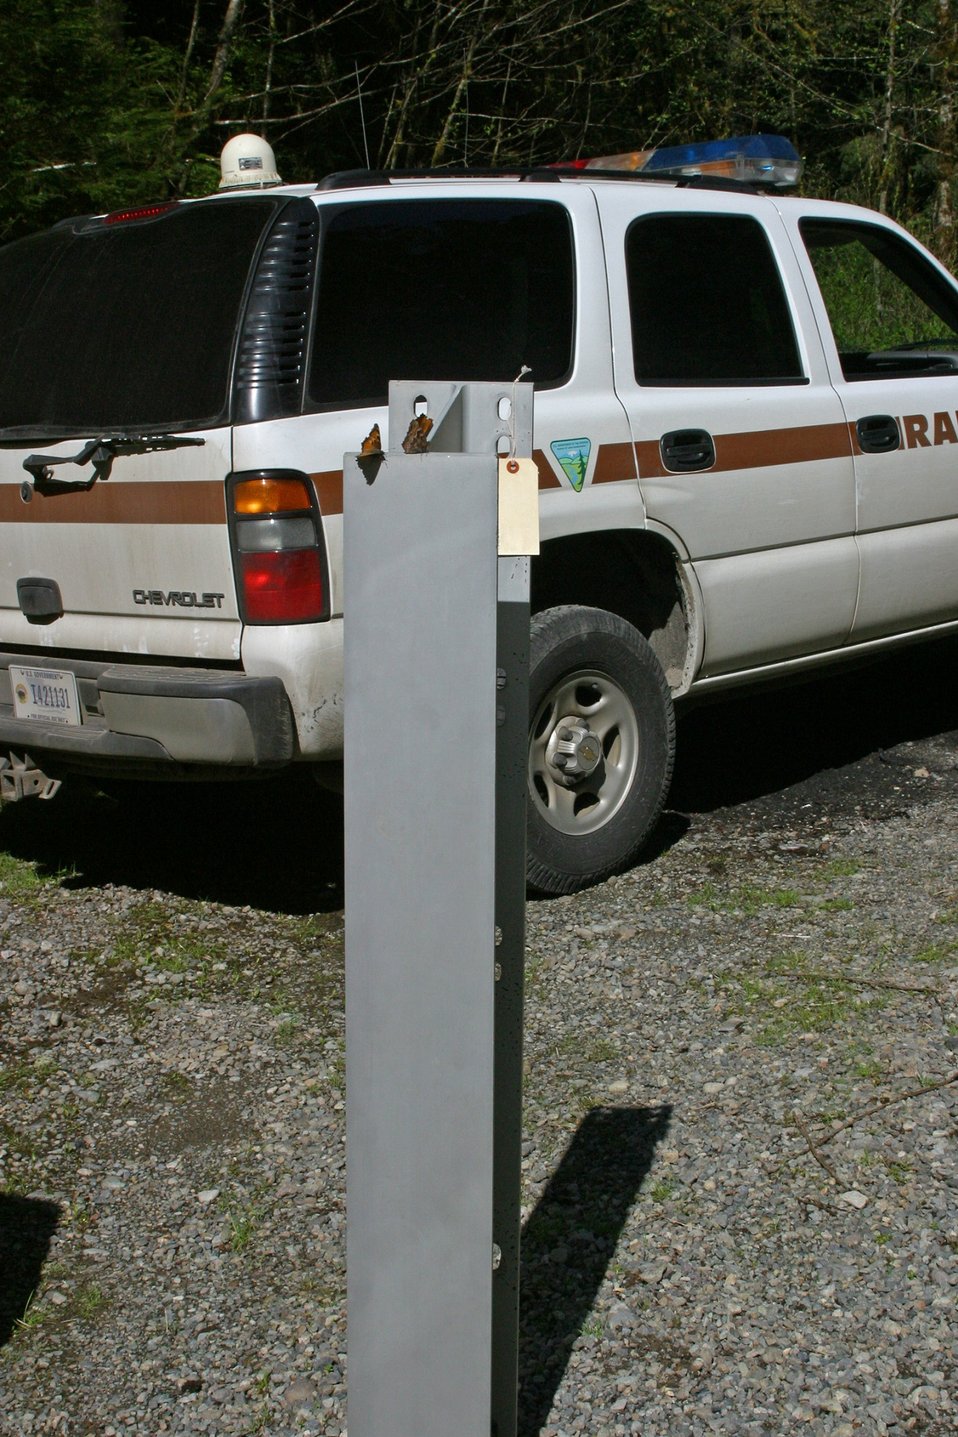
Spring butterflys flock to a piece of gaurdrail upright held in evidence from the Lyon's abridge theft.